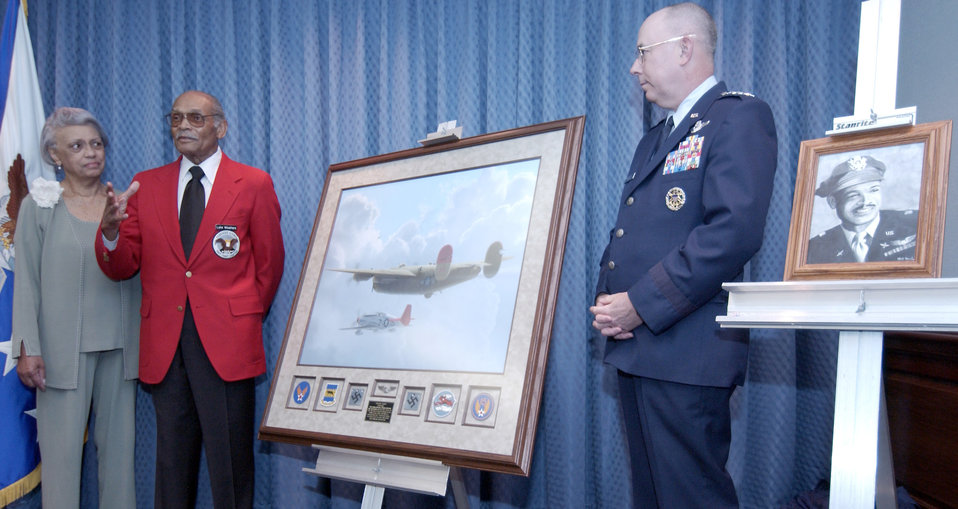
Tuskegee Airman Painting unveiled at Pentagon

WASHINGTON -- Air Force Vice Chief of Staff Gen. T. Michael Moseley (right) and Jacqueline Weathers (left) look on as her husband, retired Lt. Col. Luke Weathers, describes the action depicted in a painting honoring the famed 332nd Fighter Group of Tuskegee Airmen. Colonel Weathers and General Moseley unveiled during a ceremony in the Pentagon on June 24.